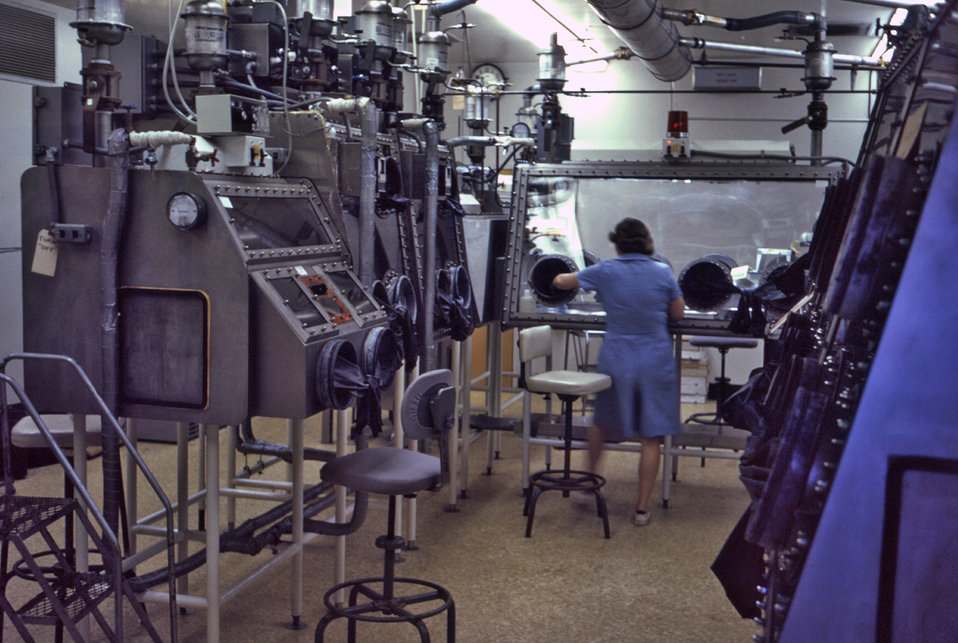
This 1975 photograph depicted Herta Wulf, PhD, as she was working on Marburg virus specimens inside the CDC's first isolation facility for Class-4 pathogenic agents.